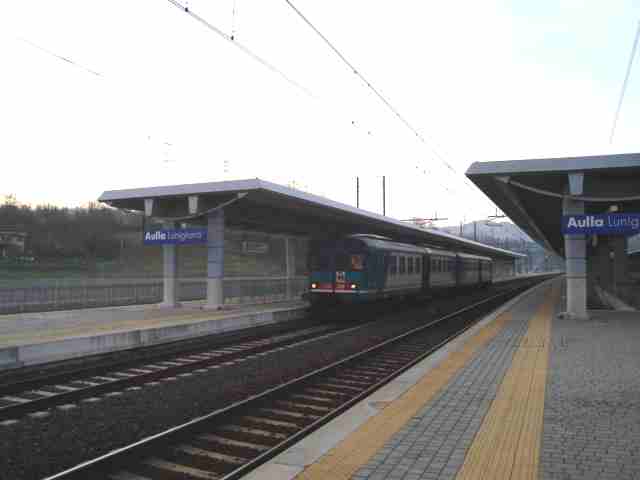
Italiano: Stazione di Aulla Lunigiana